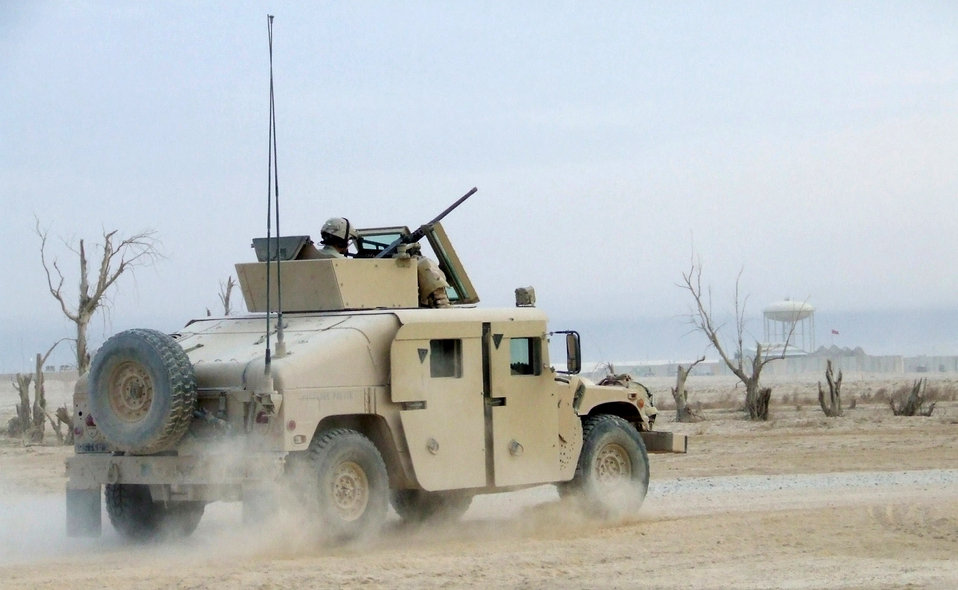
Airmen train Iraqi police

A humvee heads toward the gate of Contingency Operating Base Speicher, Iraq, manned by a team of Airmen from the 732nd Expeditionary Security Forces Squadron's Detachment 6. Detachment Airmen send convoys out daily to assess the capability of Iraqi police stations in the Salah ad Din province.